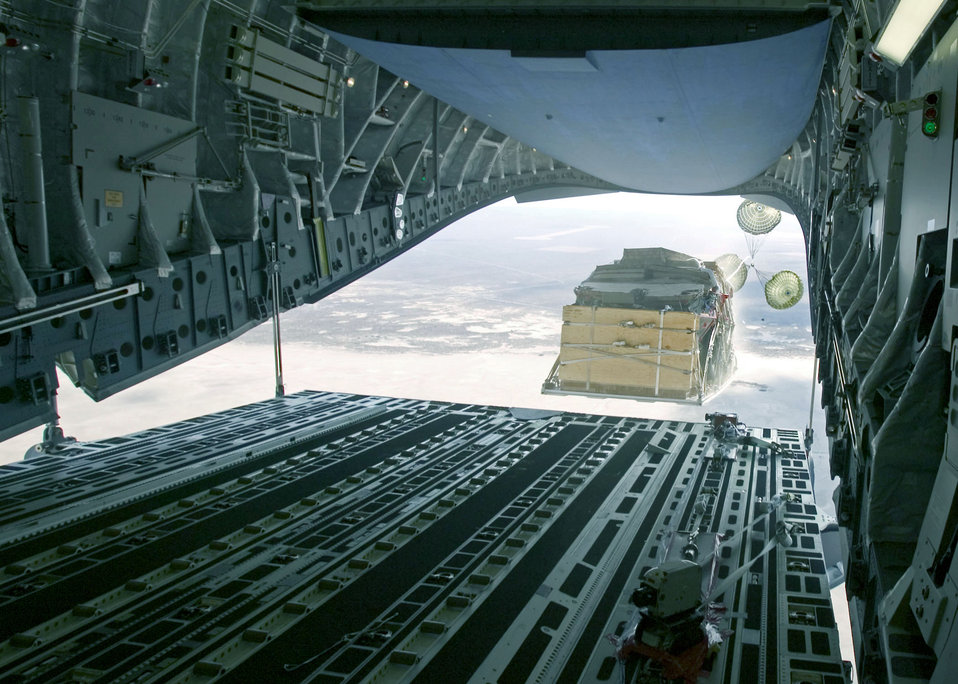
Stryker drop

EDWARDS AIR FORCE BASE, Calif. -- An Army Stryker engineer squad vehicle equipped with a mobile gun system is airdropped Aug. 13 from a C-17 Globemaster III from the 418th Flight Test Squadron here.